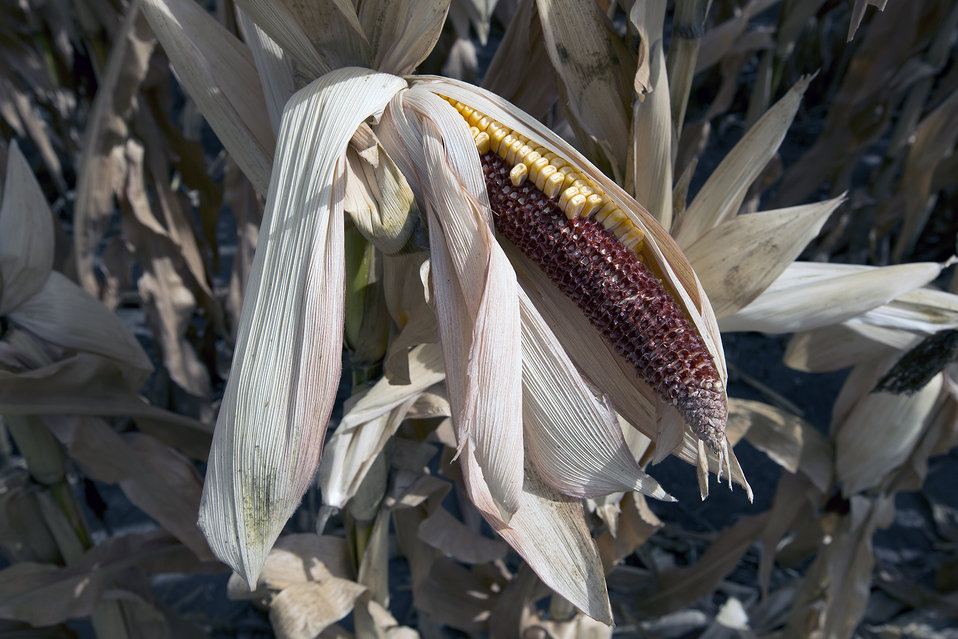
President Barack Obama and Agriculture Secretary Tom Vilsack visited the McIntosh family farm in Missouri Valley, Iowa, on Monday, August 13, 2012 to view the drought stricken crops. The federal government has already taken some steps to ease farmers whose crops are growing poorly this summer, and the administration plans to spend close to $200 million on livestock, officials announced earlier in the day. The Department of Defense is encouraging vendors to buy meat to ease the crisis.